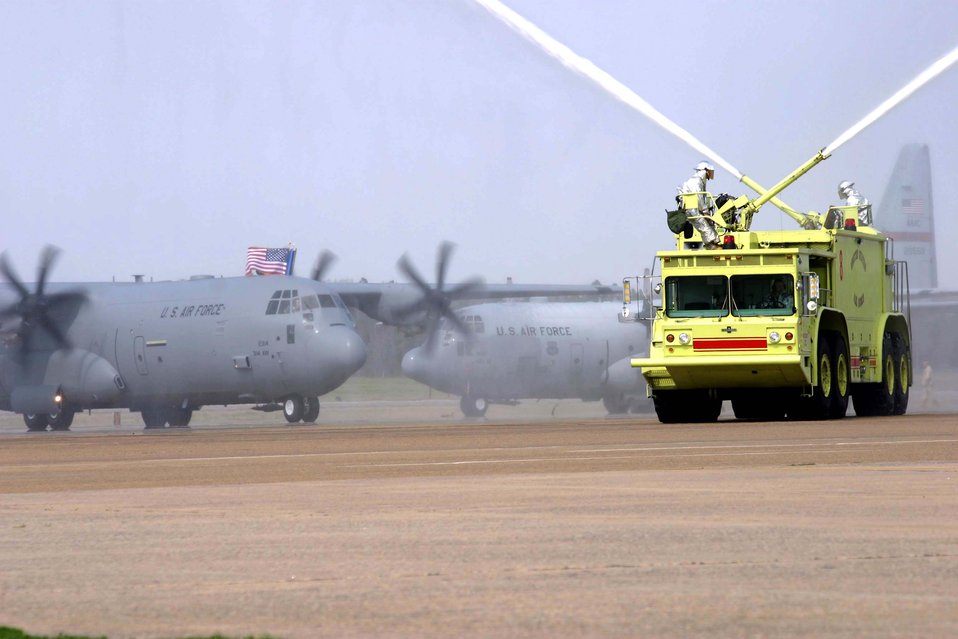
C-130J on the way

LITTLE ROCK AIR FORCE BASE, Ark. -- The Air Force's first newest C-130J Hercules taxis on the flightline here while a fire truck welcomes the aircraft with a two-water cannon salute March 19. The new transport arrived after flying from the Lockheed Martin production plant on Dobbins Air Reserve Base, Ga. It is the first J model assigned to an active-duty unit.